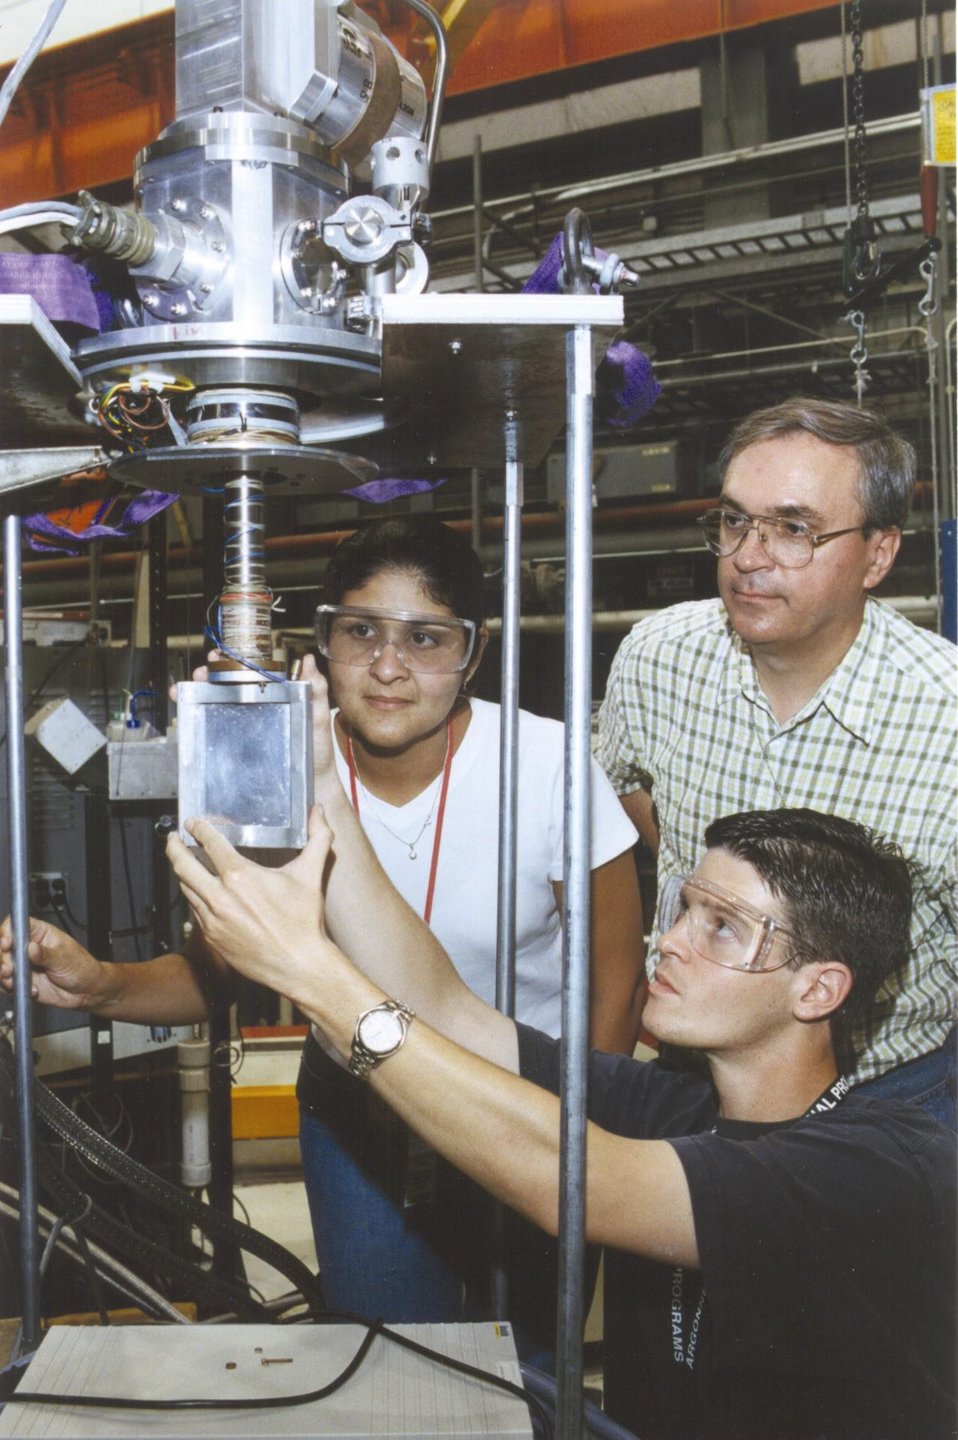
GRADUATE STUDENTS SET UP EXPERIMENT WITH ARGONNE'S JASON MCCLURE AT THE INTENSE PULSED NEUTRON SOURCE.

FUTURE X-RAY RESEARCHERS GATHER AT ARGONNE NATIONAL LABORATORY FOR TWO WEEKS OF HANDS-ON-TRAINING EACH SUMMER. A CRITICAL COMPONENT OF ARGONNE'S MISSION IS TO HELP BUILD A BETTER WORLD BY SHARING OUR DISCOVERIES WITH INDUSTRY, ACADEMIA AND THE COMMUNITY.